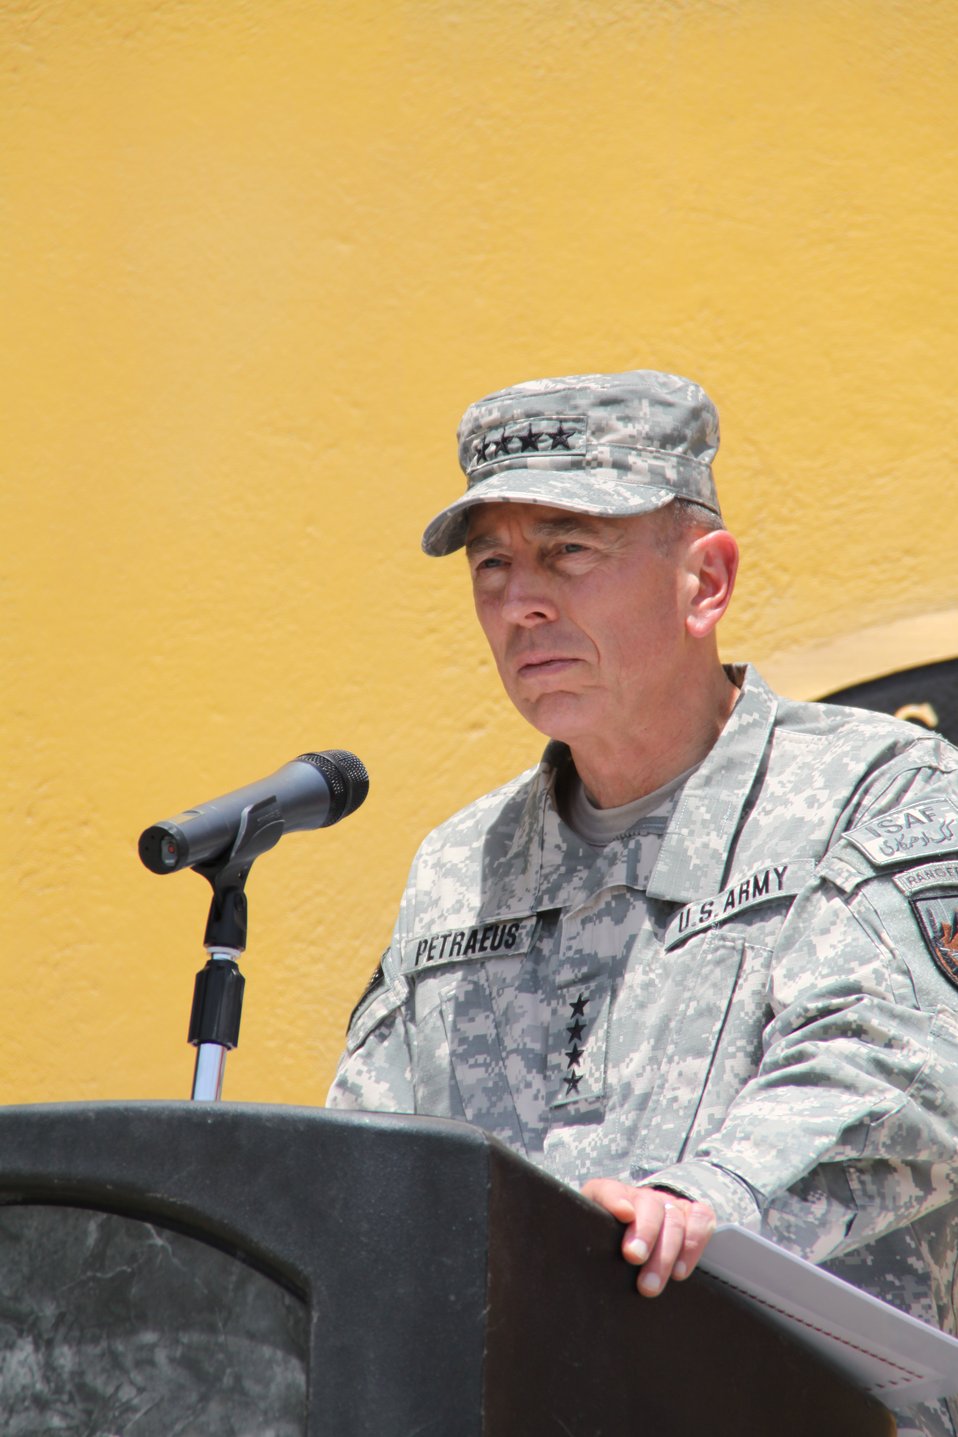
Kabul Official July 4th Celebration